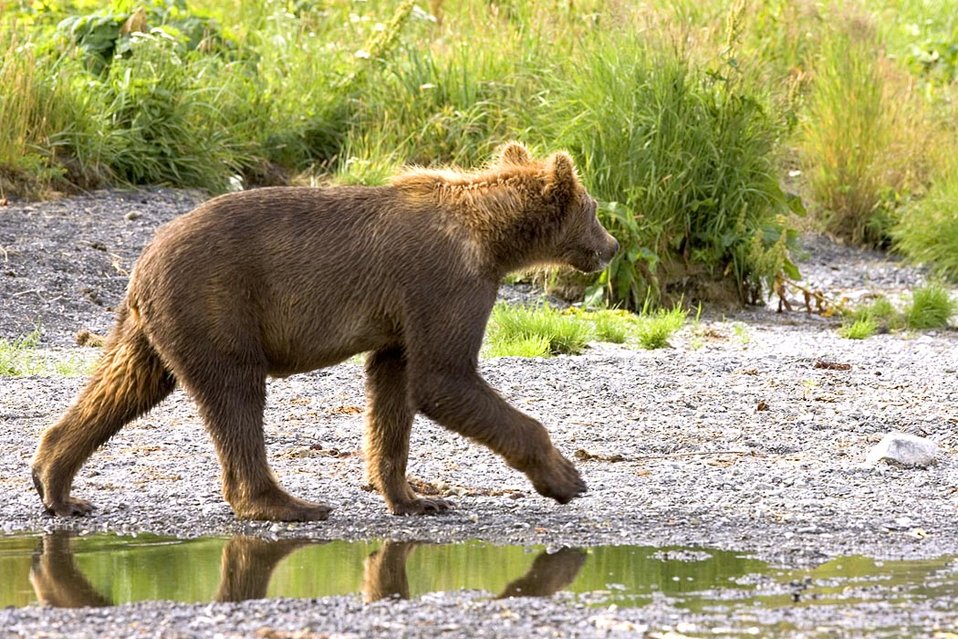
A grizzly bear cub walking.